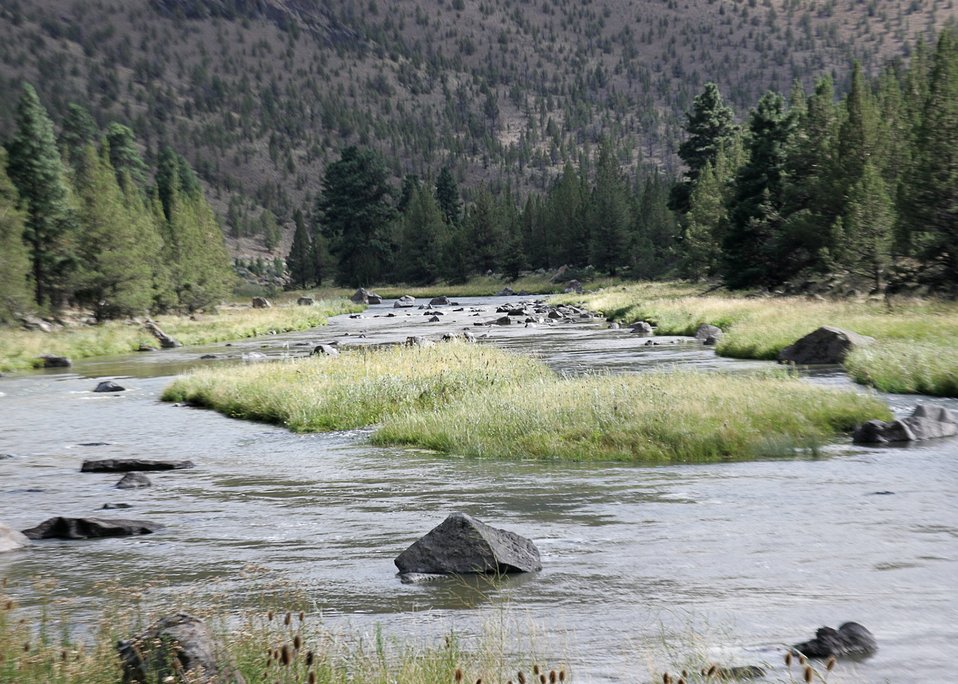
Lower Crooked River Backcountry Byway.